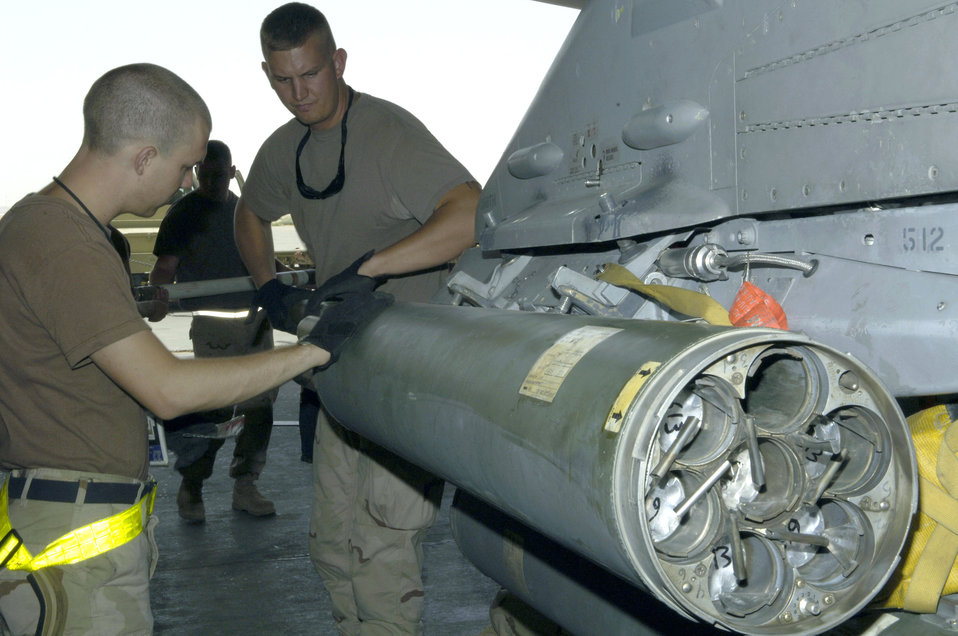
Falcon in the desert

Senior Airman Nathan Stolle (left) helps Staff Sgt. Charles Evelo arm an F-16 Fighting Falcon with illumination rockets at Balad Air Base, Iraq, on July 11. Both Airmen are assigned to the 421st Expeditionary Aircraft Maintenance Squadron.